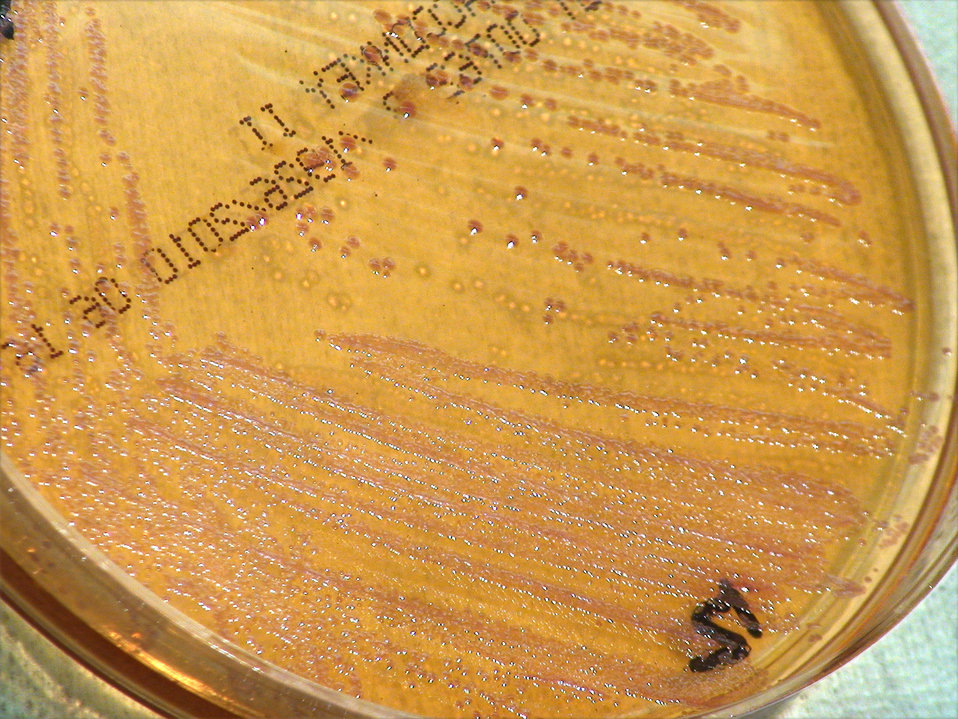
This closer view of PHIL 12413 depicts the colonial morphology displayed by Gram-negative Burkholderia thailandensis bacteria, which was grown on a medium of MacConkey agar, for a 48 hour time period, at a temperature of 42�C. Of importance, is the metallic sheen displayed by these colonies.